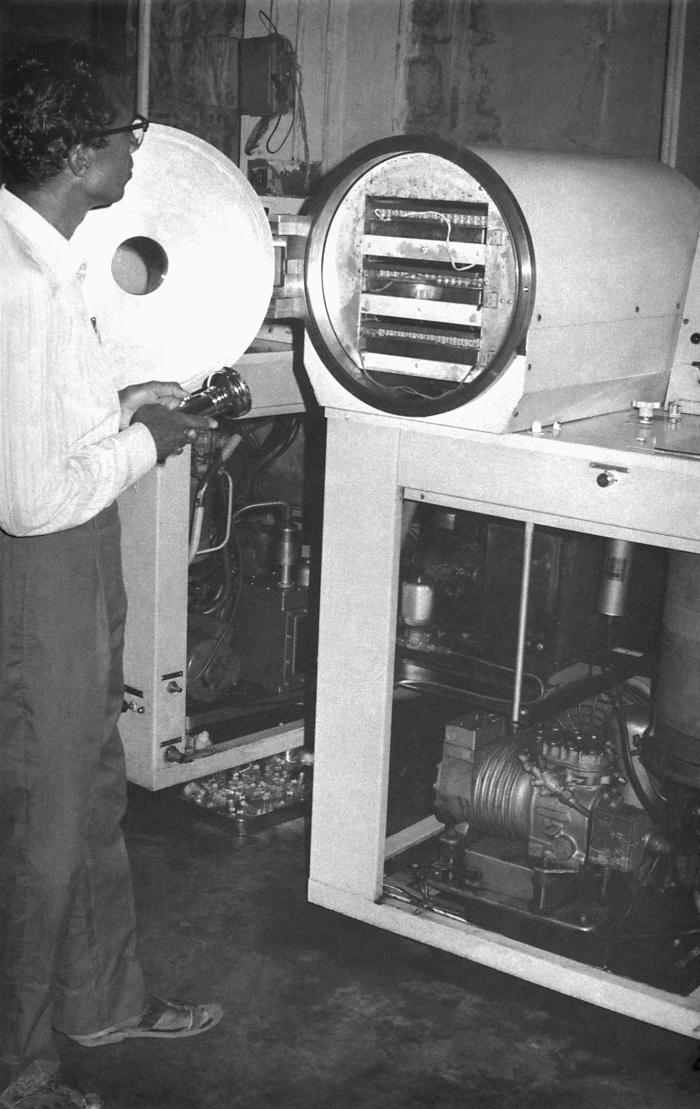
This image depicted a technician in a Bangladesh laboratory who was in the process of creating smallpox vaccine. It was taken by Dr. Stan Foster, EIS, Officer, Class of 1962, while he was part of the worldwide Global Smallpox Eradication Campaign of the late 1960s, early 1970s.